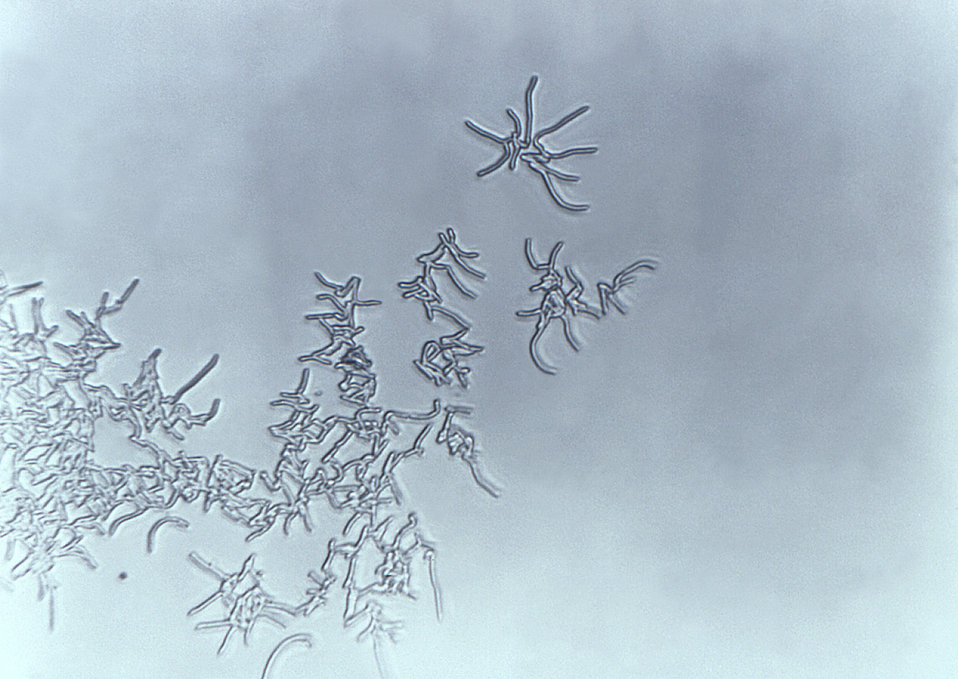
Magnified 400X, this slide culture revealed the presence of Nocardia-like Gram-positive Rhodococcus group, which had been cultured on tap water agar.